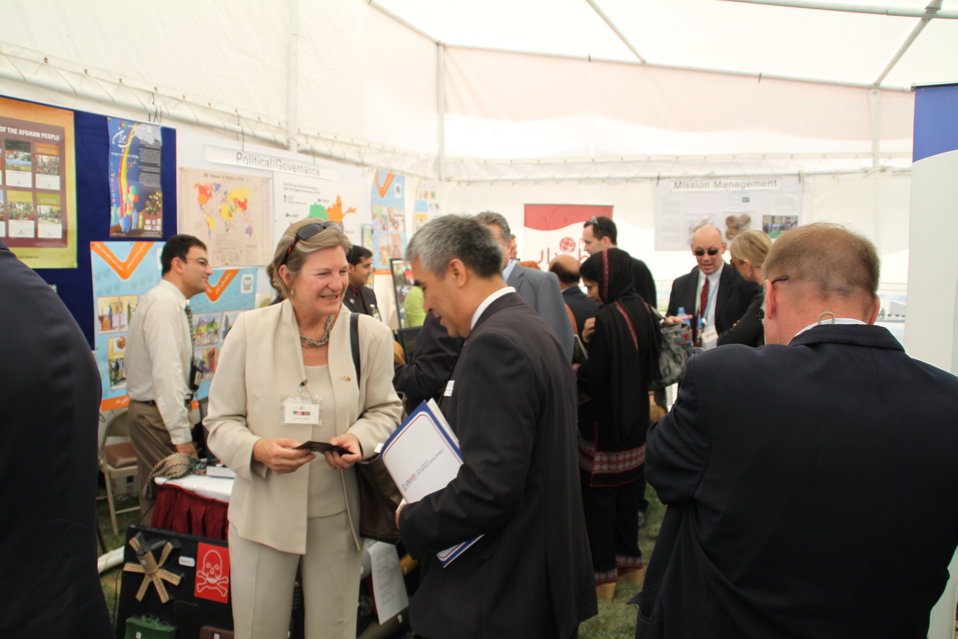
Kabul Official July 4th Celebration